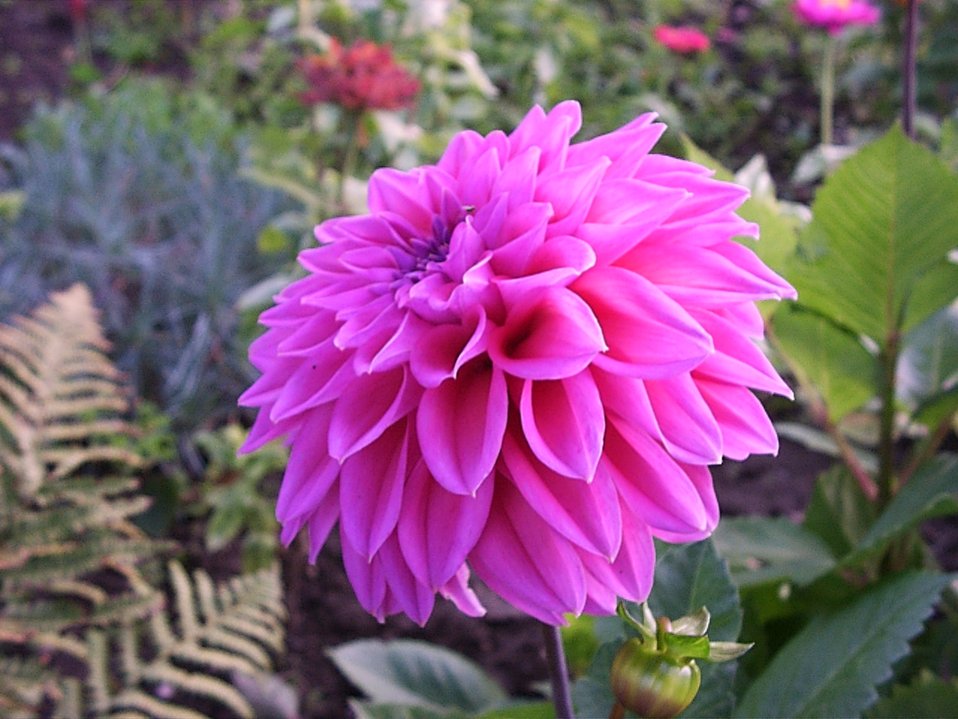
Decorative Dahlia 'Lavender Perfection'. Photo made by de:Benutzer:Sebastian Wallroth in the garden of my grandfather in de:Mühlhausen (Thüringen), Germany on September 30, 2004.